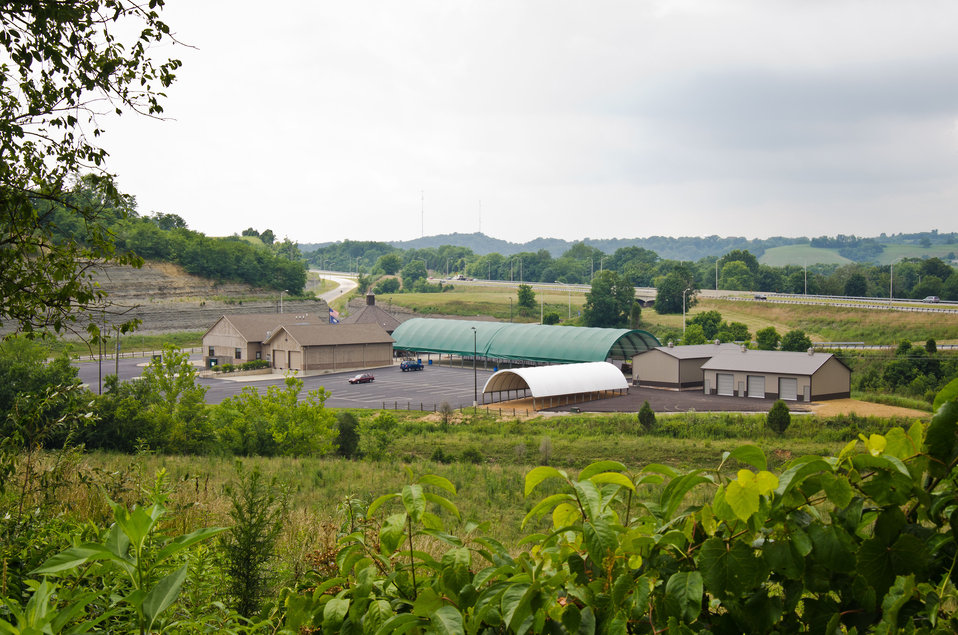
Southeast view of the Bath County Agricultural Education and Marketing Center, Owingsville, KY, on Friday, July 15, 2011. The green and white overhang covers the Farmer's Market and Produce Auction area. The adjoined buildings on the left are (left-right) Education Center (with two windows), commercial kitchen with two catering loading docks, Kentucky Market Pavilion, and the Bath County Cooperative Extension. The warehouses (right) are for temporary produce storage for auctions. The Center was the recipient of a $400,000 Rural Business Enterprise Grant. It has given farmers and producers from Bath and surrounding counties the opportunity to manufacture and market their locally grown and locally produced value-added and “Kentucky Proud” branded products, including but not limited to, fresh produce, artisan crafts and specialty food products. The Center is open year-round and allow residents to sell products in four different retail categories, including Kentucky products, regional crafts, “green” groceries and bakery/deli. Several producers expressed their gratitude for Rural Development’s assistance in making the center a reality. The project was made possible through American Recovery and Reinvestment Act of 2009 funding enacted by the 111th United States Congress in February 2009 and signed into law on February 17, 2009, by President Barack Obama.